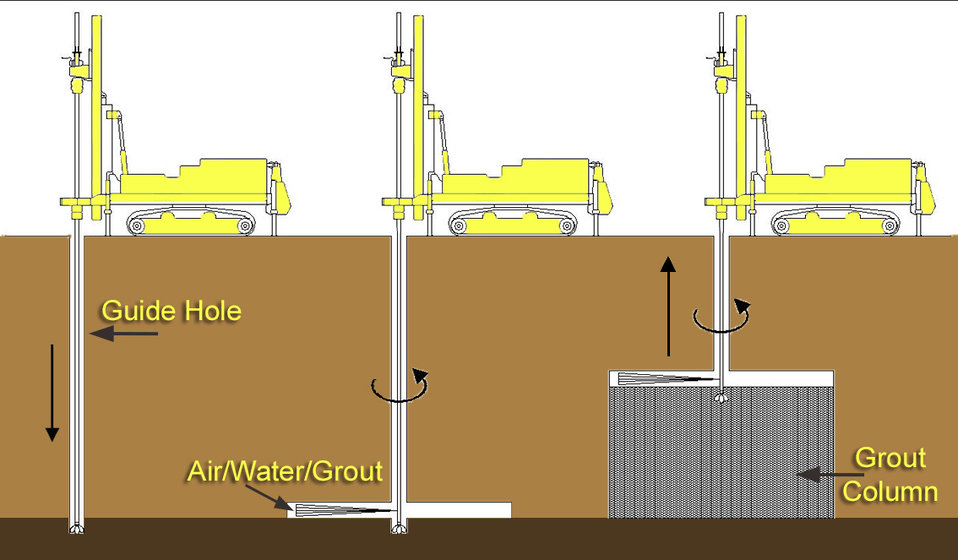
Illustration of jet-grout approach to precisely inject seepage cutoff walls inside levees

Jet grouting is a surgically-precise method of injecting seepage cutoff walls into levees where construction is constrained by encroachments like buried utilities. Seepage cutoff walls strengthen the levee and help prevent water from seeping through or underneath. Crews install the wall by drilling into the levee and injecting the wall in overlapping columns. *For simplicity, the illustration shows a single fluid jet grout method. There are three general injection methods—single fluid (grout), double fluid (air and grout) and triple fluid (air/water/grout).